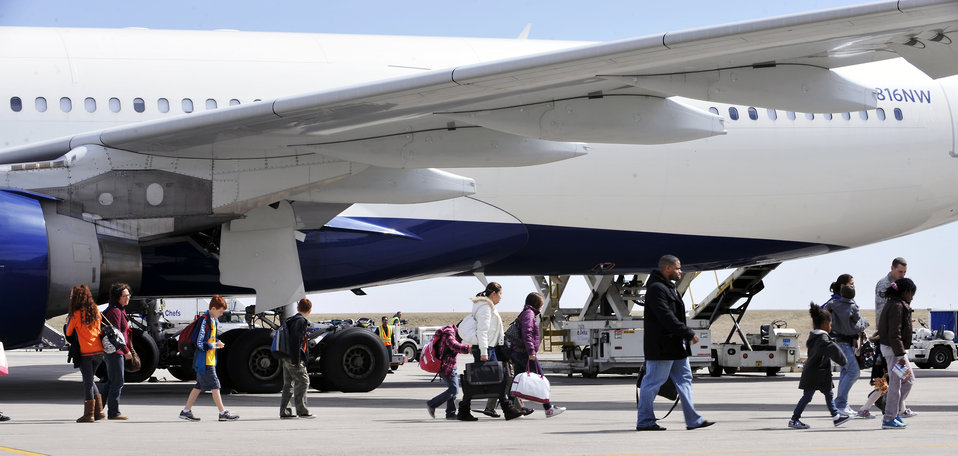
Military family members arrive

Military family members arriving from Japan exit an aircraft March 24, 2011, at Denver International Airport, Colo. Family members voluntarily evacuated from Japan due to the recent natural disaster.